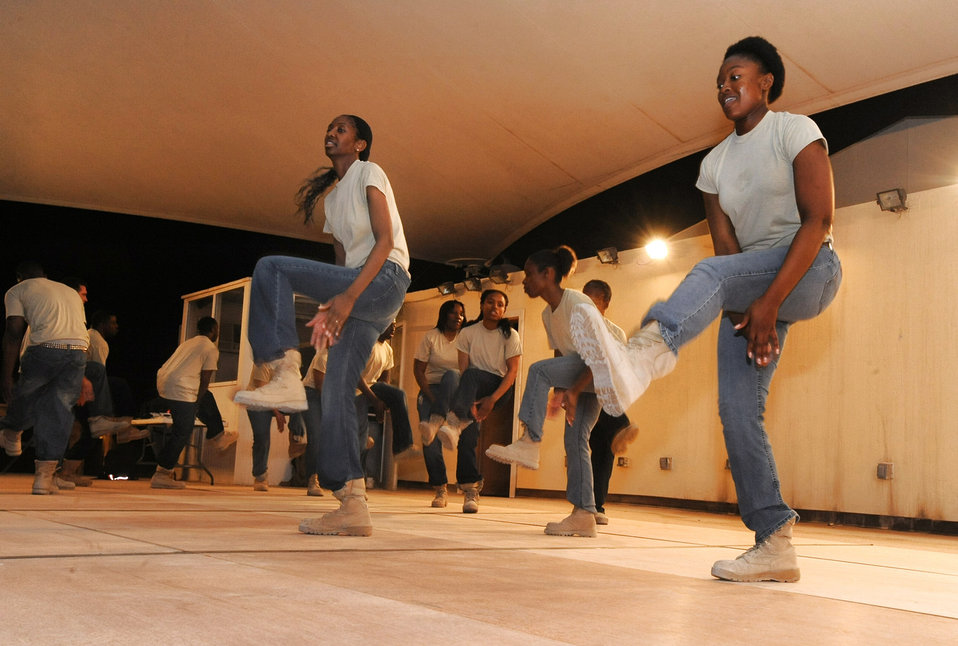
Step it up

Members of a base Step team perform a Step routine during a special edition Karaoke Review in celebration of African American History month in Southwest Asia Feb. 15. The team comprised of various coalition servicemembers performed several step-dance routines. This version of step-dancing or